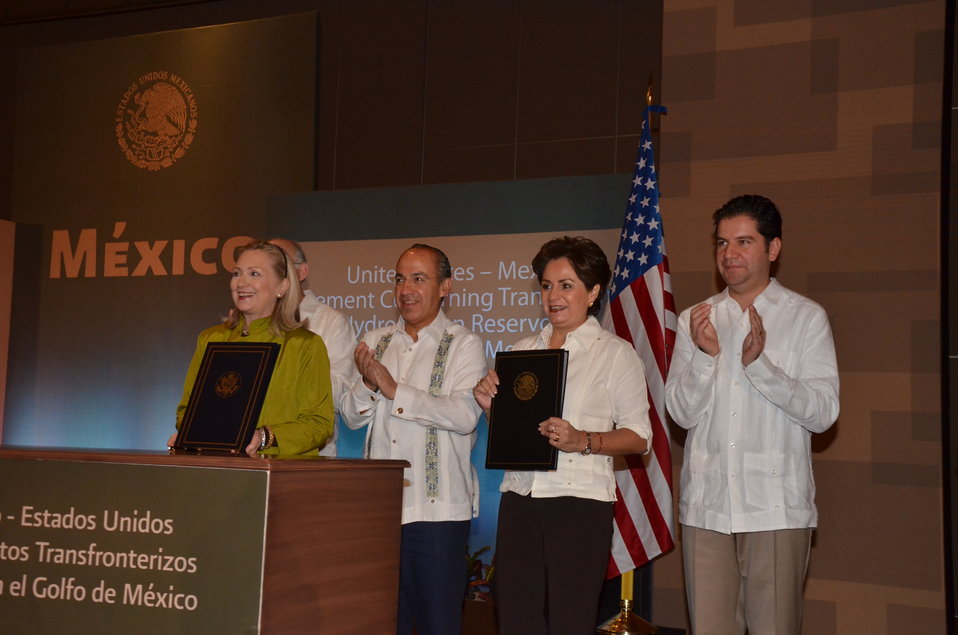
Secretary Clinton and Mexican Foreign Minister Espinosa Sign the U.S.-Mexico Agreement Concerning Transboundary Hydrocarbon Reservoirs in the Gulf of Mexico

From left to right, U.S. Secretary of State Hillary Rodham Clinton, Mexican President Felipe Calderon, Mexican Foreign Minister Patricia Espinosa, and Mexican Secretary of Energy Jordy Herrera pose for a photo after signing the U.S.-Mexico Agreement Concerning Transboundary Hydrocarbon Reservoirs in the Gulf of Mexico, in Los Cabos, Mexico, on February 20, 2012.